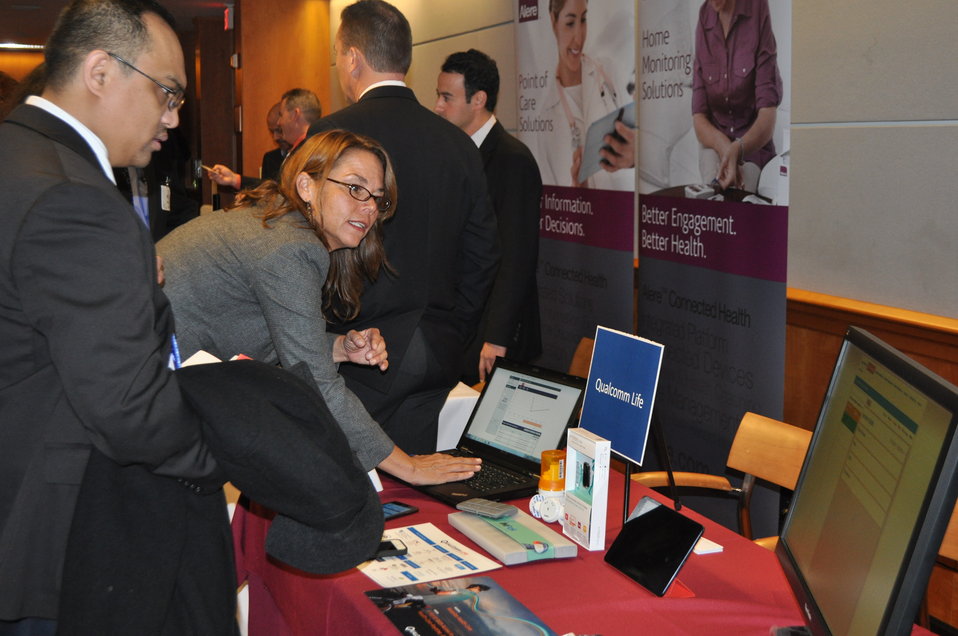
12.6.13 mHealth Innovation Expo

FCC mHealth Innovation Expo.